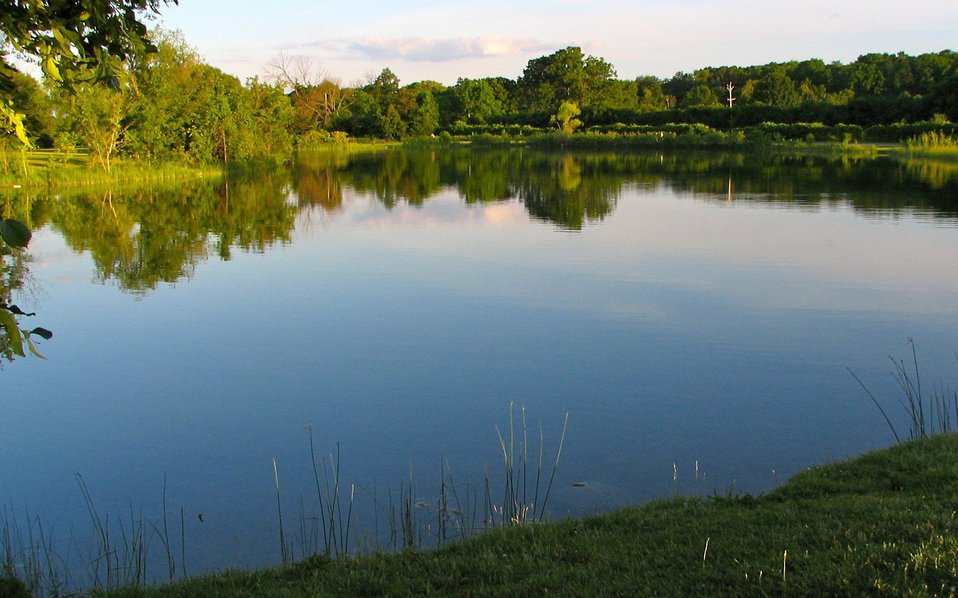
Gallup Park, Huron River, Ann Arbor, MI.